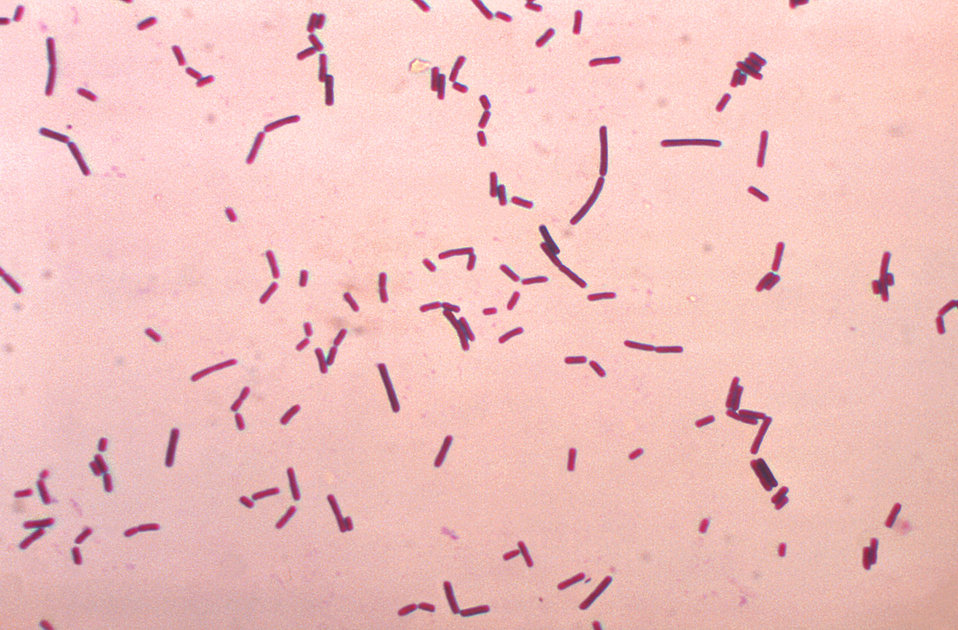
Bacillus brevis. Gram stain.